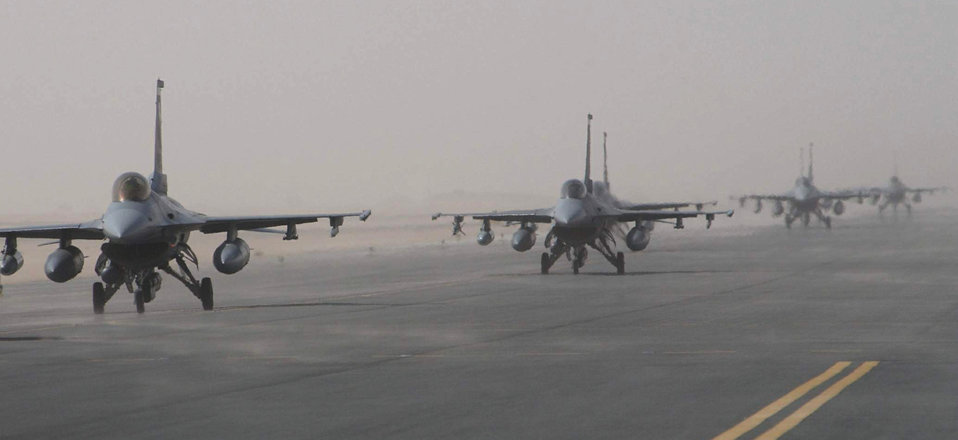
Dusty falcons

OPERATION IRAQI FREEDOM -- F-16 Fighting Falcons taxi toward parking spots at a forward-deployed location in Southwest Asia. Airmen and aircraft from Hill Air Force Base, Utah, are currently deployed supporting Operation Iraqi Freedom.